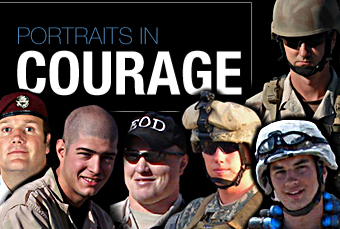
Portraits in Courage

Courageous actions of 13 Airmen are highlighted in the 2nd edition of the Chief of Staff's Portraits in Courage. The vignettes are available on Air Force Link under the Portraits in Courage area. The stories are also compiled in a soft-cover book being distributed in limited numbers to the major commands.